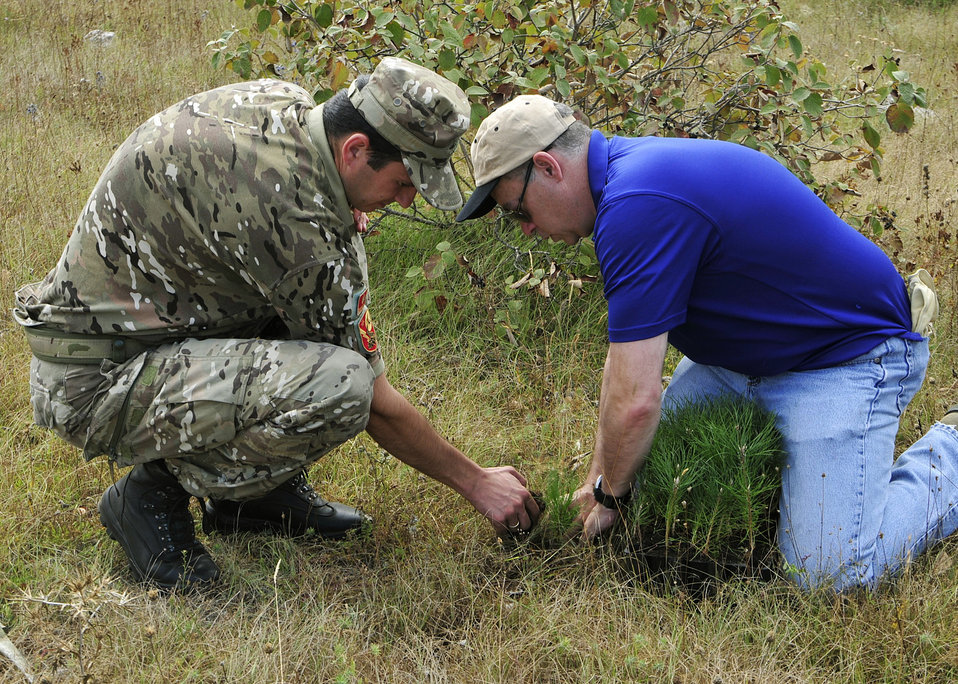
Joint exercise kicks off with community day

Montenegrin Army Corporal Pogyre Markovic and (Capt.) Joseph Fisher plant a black pine tree Sept. 8, 2010, in the Topolovo region of Montenegro. Chaplain Fisher is in Montenegro for MEDCEUR 10, a Joint Chiefs of Staff-sponsored Partnership for Peace medical exercise for central and eastern Europe. Nine countries are participating in this exercise. Chaplain Fisher is the 48th Fighter Wing chaplain at Royal Air Force Lakenheath, England.